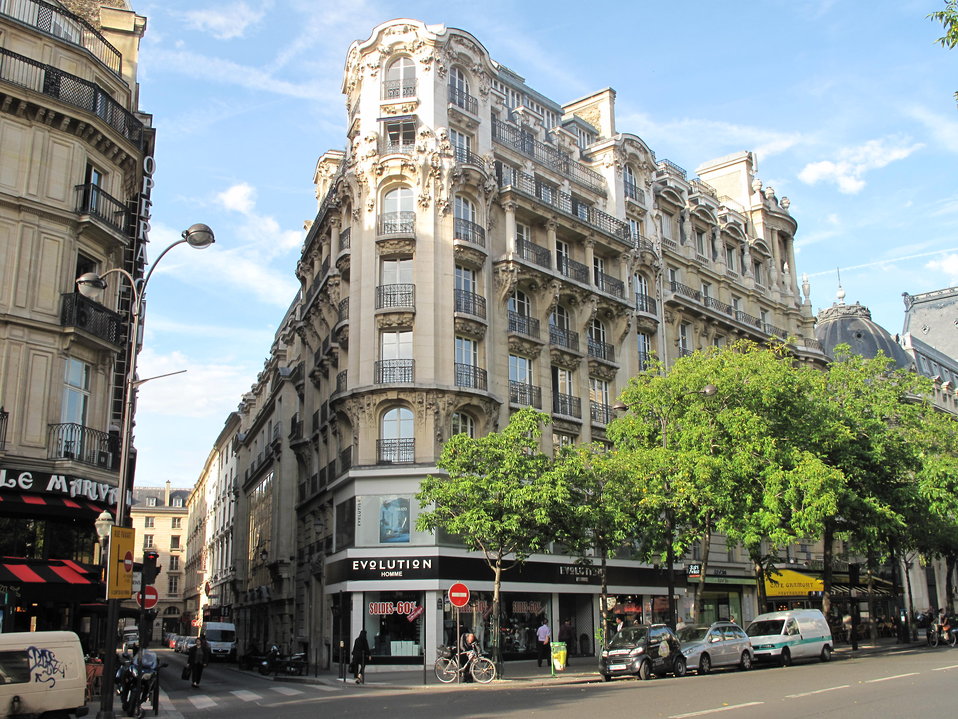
Building in Art Nouveau style built in place of the caf√© anglais (1802-1913) at the corner of the boulevard des Italiens and the rue Marivaux, Paris 2nd arr.) Fran√ßais†: Immeuble de style Art Nouveau construit √† la place du caf√© anglais (1802-1913) √† l'angle du boulevard des Italiens et de la rue Marivaux, Paris 2e arr.)